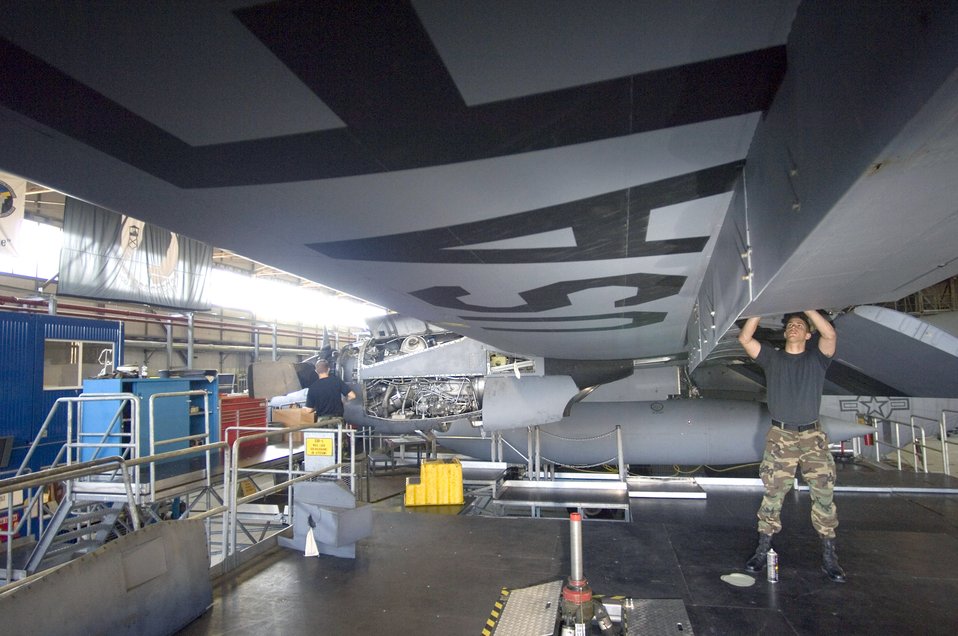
Isochronical inspection

Airman 1st Class Edward Hall applies fabrication patches to the wing of a C-130 Hercules during an isochronical inspection at Ramstein Air Base, Germany, on July 18. Airman Hall, of Delray Beach, Fla., is a crew chief with the 86th Maintenance Squadron.